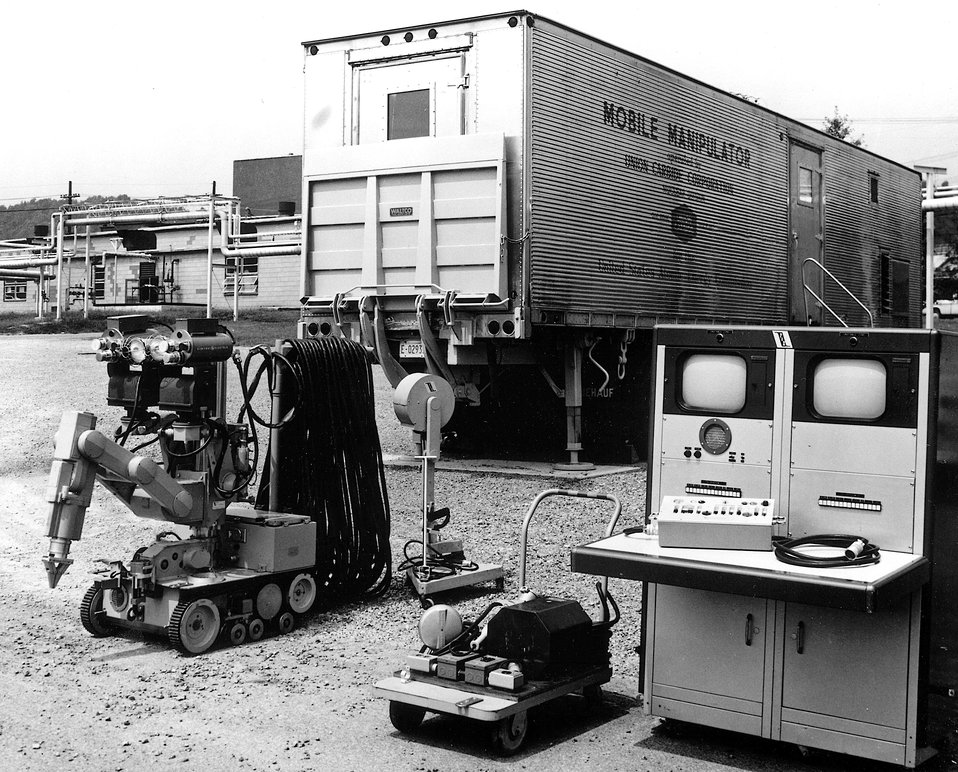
The Y-12 mobile manipulator, left, is used primarily as a safety support backup in operations involving the handling of toxic or radioactive materials in the Energy Research and Development Administration's Oak Ridge Y-12 Plant. Circa 1974.